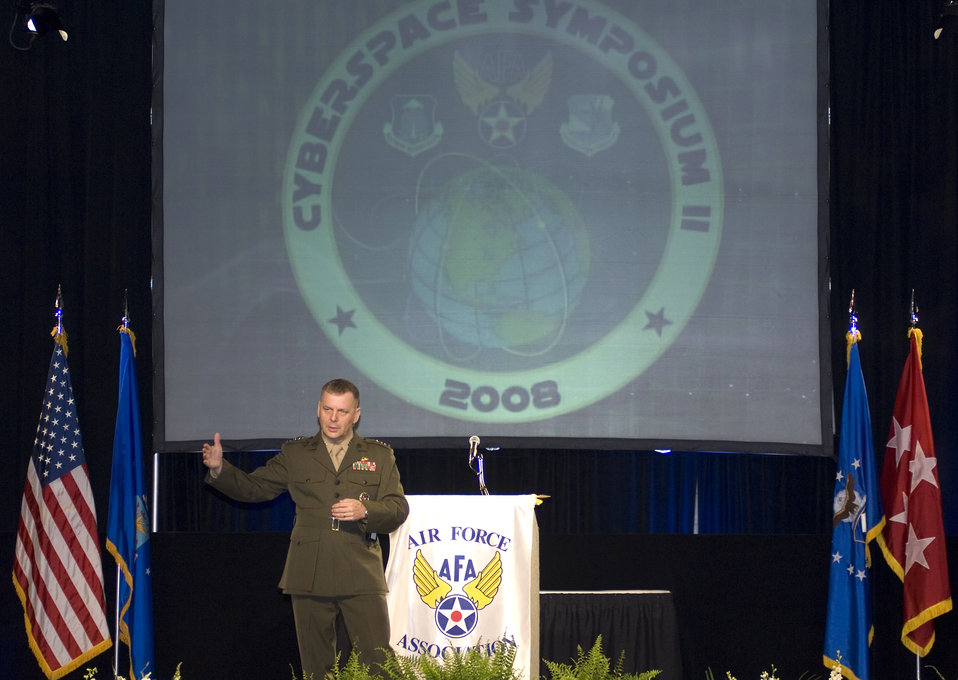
JCS vice chairman: break service barriers

Gen. James E. Cartwright, vice chairman of the Joint Chiefs of Staff, addresses attendees June 19 at the second annual Air Force Cyberspace Symposium in Marlborough, Mass.